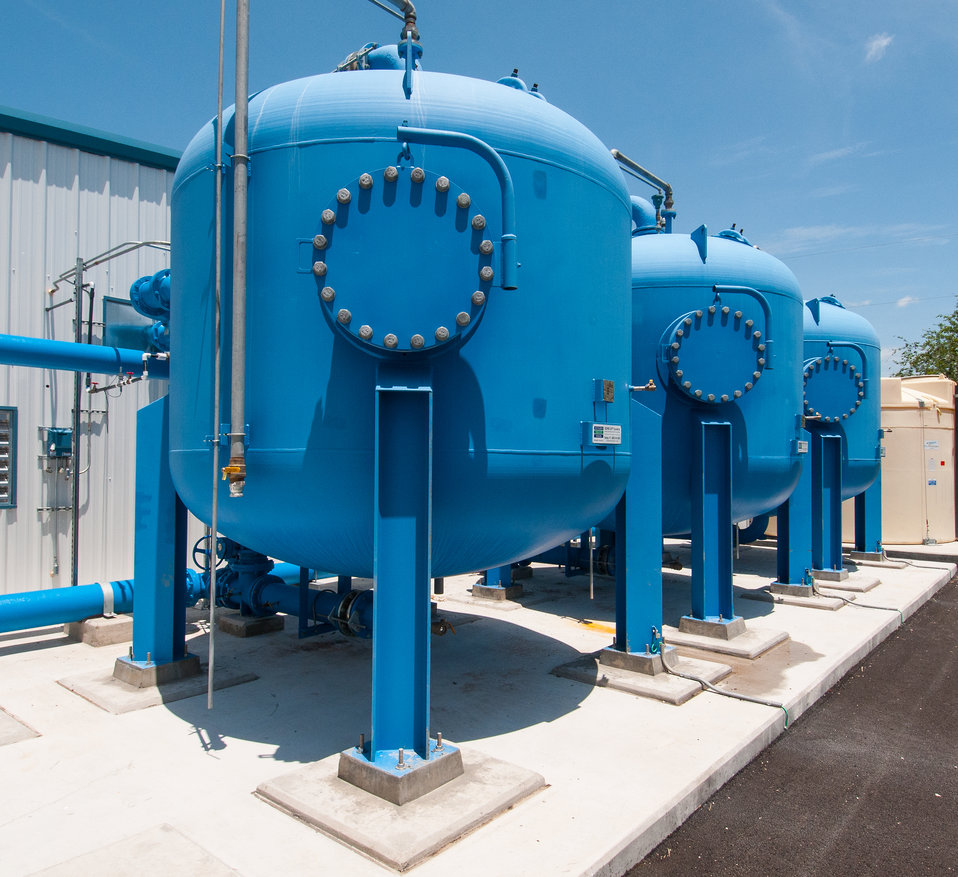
Arsenic removal absorber vessels, at the Freer Water Control and Improvement District (FWCID) Arsenic Removal System Site, on Tuesday, June 18, 2013, in Freer, Texas.

FWCID benefits from the financial assistance of the U.S. Department of Agriculture (USDA) Rural Development (RD) to complete a two-phase approach to meeting the city’s water supply and safety needs, on Tuesday, June 18, 2013. Although, the naturally occurring arsenic levels have remained constant for more than a century, the Environmental Protection Agency (EPA) safe level standards have established lower levels of arsenic to be safe for human consumption. To meet those levels FWCID approached USDA and was awarded a $986,000 loan for Phase I, to install two new water wells, each rated at 167 gallons per minute (creating a total of eight wells); 13,600 feet of well collection lines; and 15,000 linear feet of well control line to remotely control the well pumps and the 1,000,000 gallon holding tank at the well facility, which supplies water to the new Arsenic Removal System (Phase II). Previously, water was manually controlled by personnel who knew when and how long to manually opened and closed water valves or started well pumps to ensure holding tank levels were within operating levels during peek and slack times of the day. Phase II was a combination of a $1,832,000 loan and a $1,258,750 grant, which provided for the customized arsenic removal system, seen in these photos. The system includes a new 3,530 sp. ft. facility, on a .76-acre site, and houses the operations room, computer and power system, laboratory room, and pump systems. The entire operation can be monitored through a desktop computer interface system. The computer-controlled system ensures raw water is fed to the arsenic removal pump system, which works in sequence to maintain a constant pressure, when needed, to pump water through (blue) arsenic removal absorber vessels, and into ground storage tanks that feeds the residential and commercial needs of the city. Samples of water are periodically tested; and so far the arsenic levels have been below 1 part per billion (PPB), well under the 10 PPB limit.